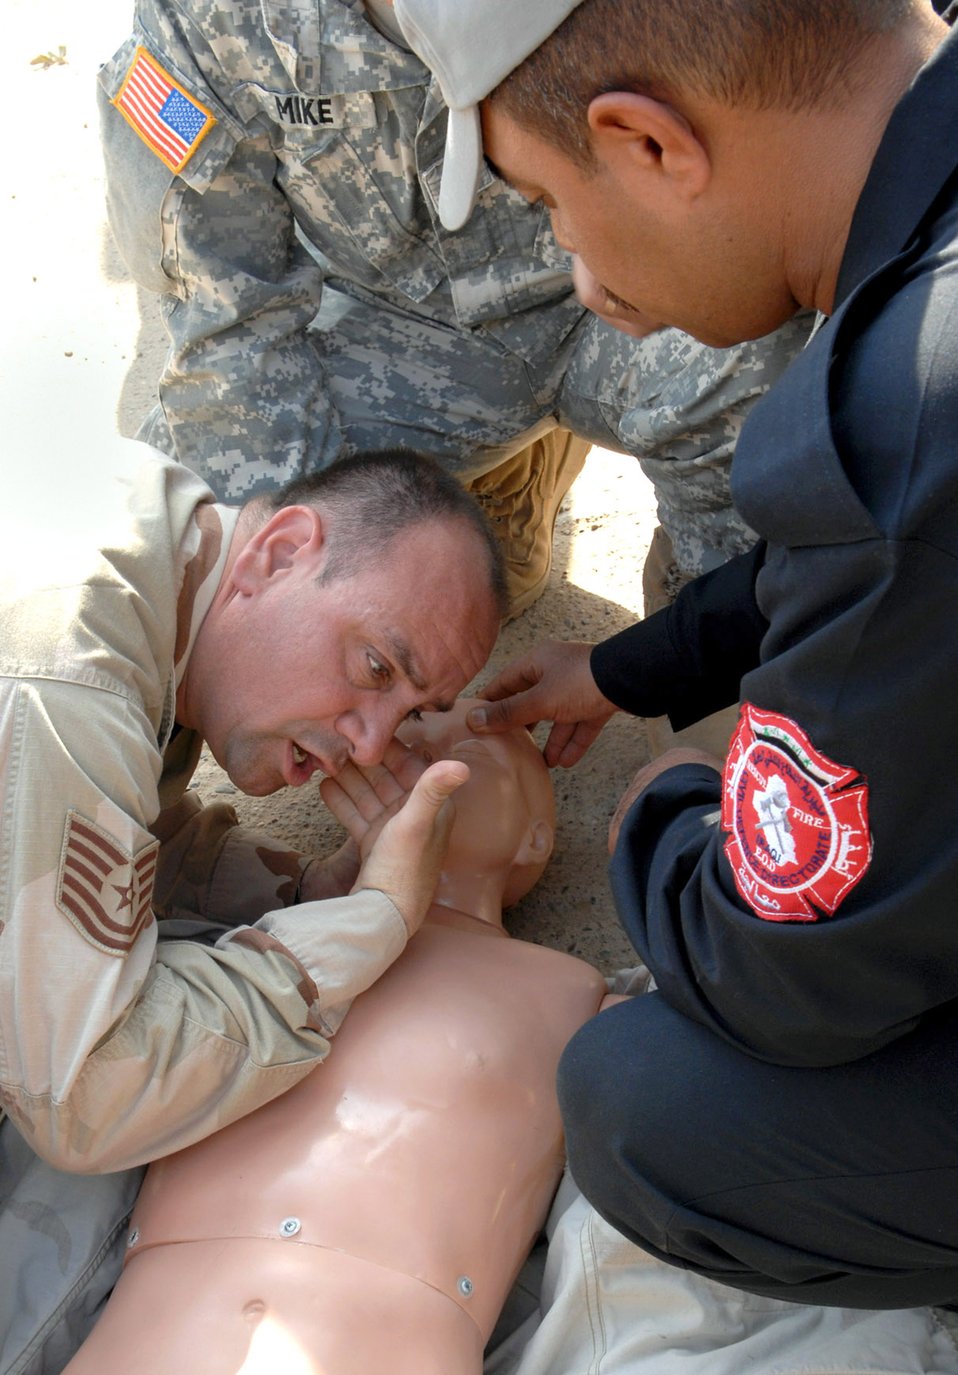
Airmen train Iraqi firefighters for improved regional safety

Tech. Sgt. Chancey Cruger gives instruction on first aid to Iraqi firefighters Feb. 27 at Kirkuk Air Base, Iraq. The course is part of an ongoing program to help Kirkuk improve fire response efforts. Sergeant Cruger is a 506th Expeditionary Civil Engineer Squadron firefighter.